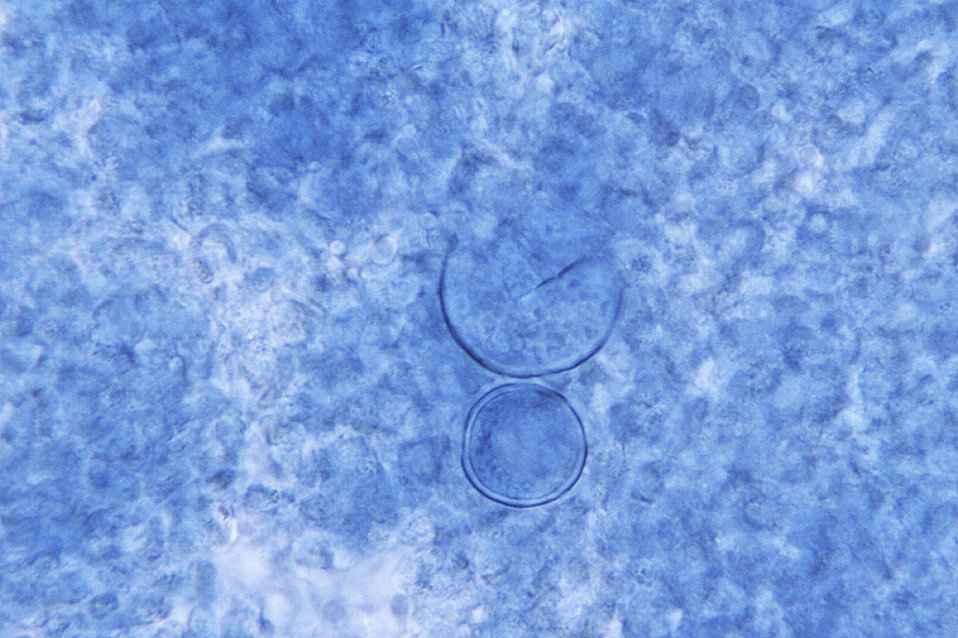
This photomicrograph revealed the presence of two round, thick-walled, spherule-staged Coccidioides immitis fungal organisms.